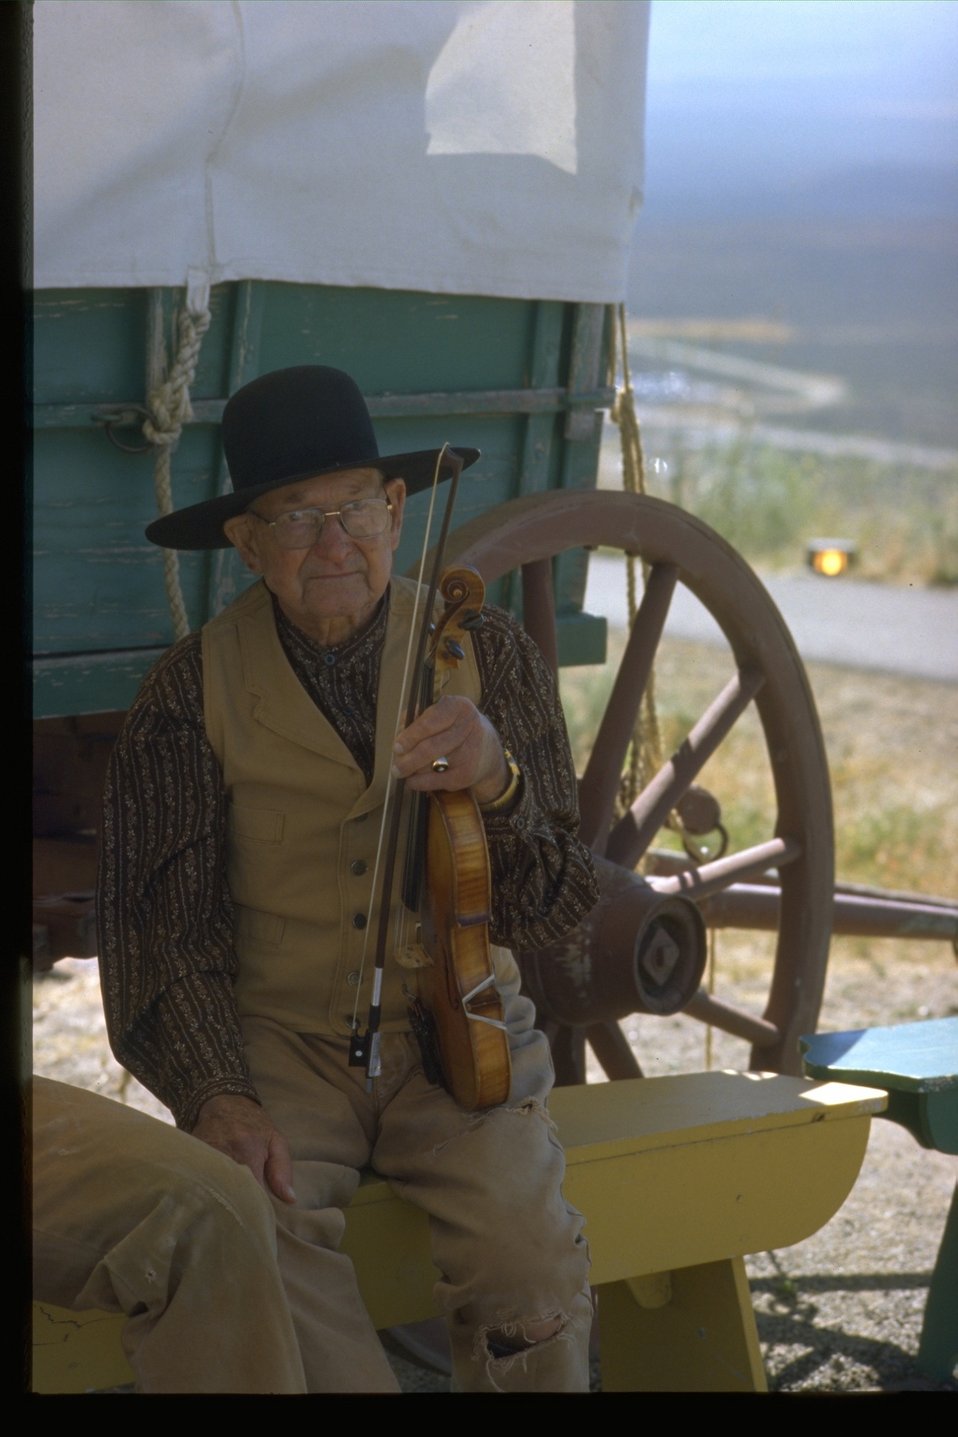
The Fiddler from the Pioneer Festival at the NHOTIC.